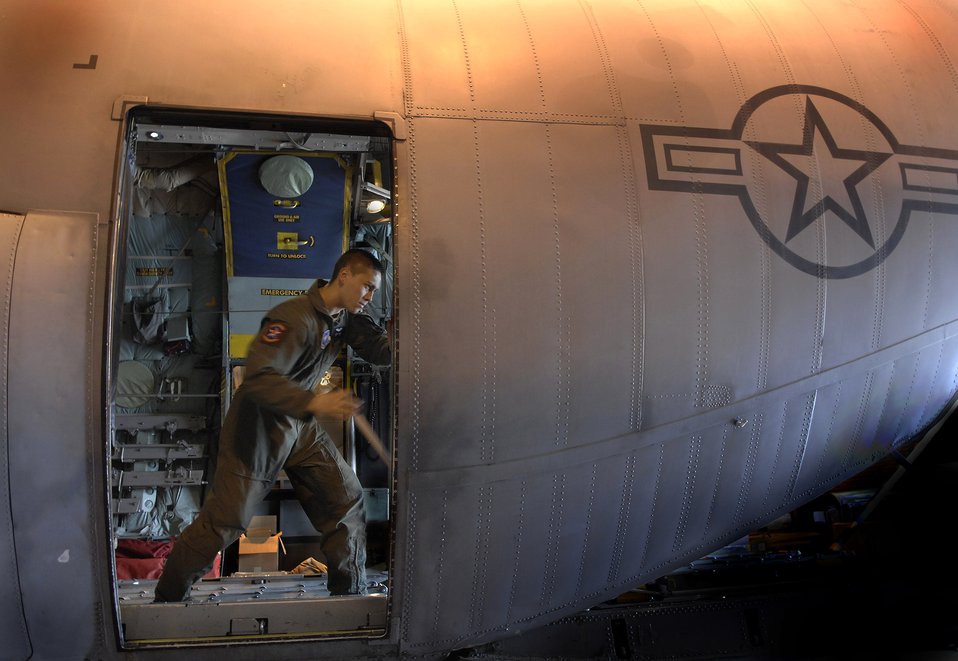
Training to make a herculean effort

Airman 1st Class Justin Magno manually hand cranks the ramp on a fuselage trainer during upgrade training on the C-130 model trainer at Little Rock Air Force Base, Ark., Nov. 1. The trainers are C-130 models that have had the wings taken off to allow students to train on the actual hardware. Airman Magno is a student with the C-130 Center of Excellence.